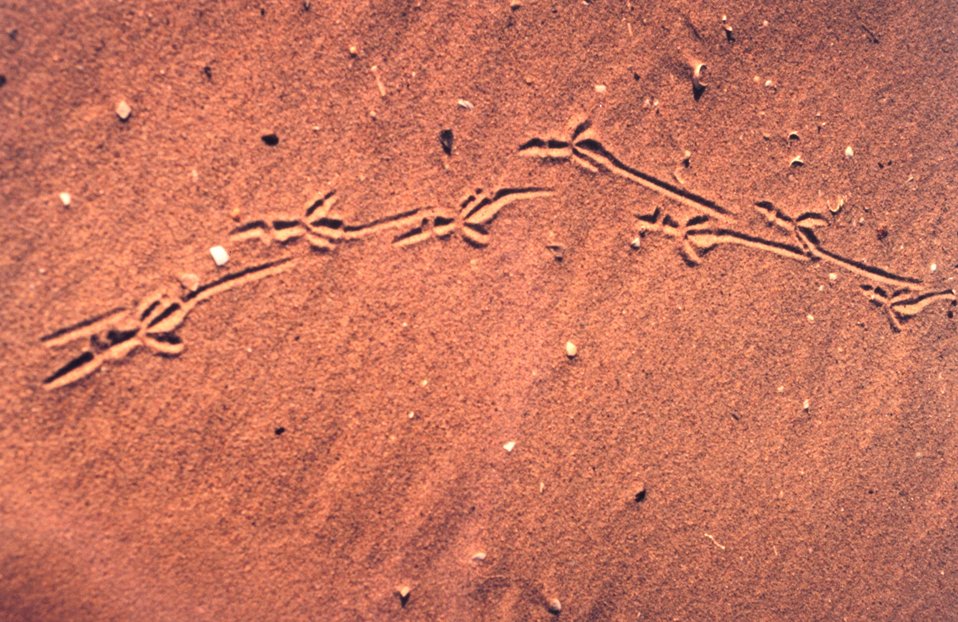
Footprints in the sand.